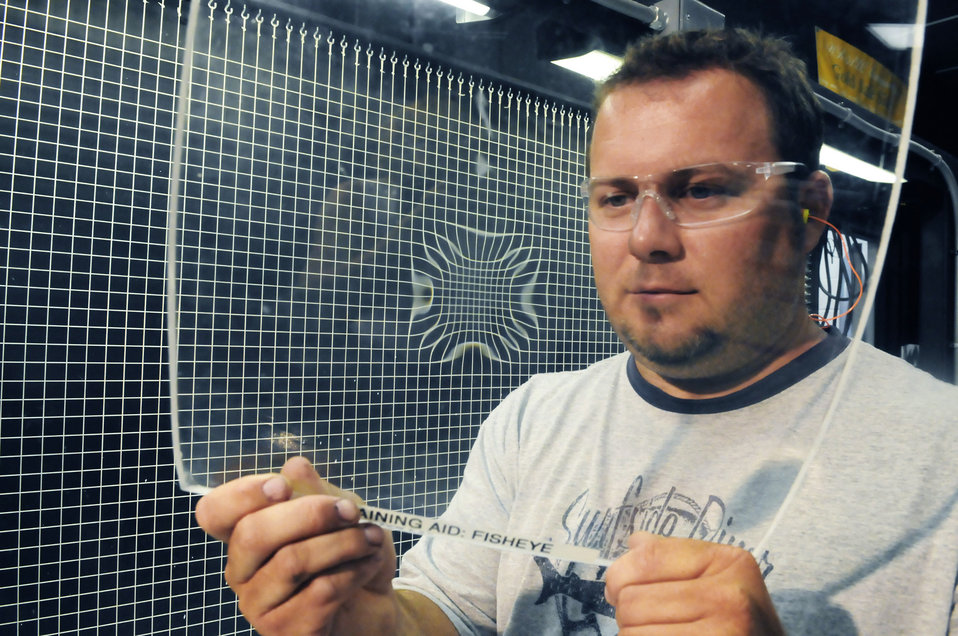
Robins maintainers give pilots unobstructed vision

Michael Daley holds a piece of F-15 Eagle canopy in front of a grid board that shows an imperfection caused by heat that creates a fisheye illusion at Robins Air Force Base, Ga. Mr. Daley works in the 561st Aircraft Maintenance Squadron canopy shop.